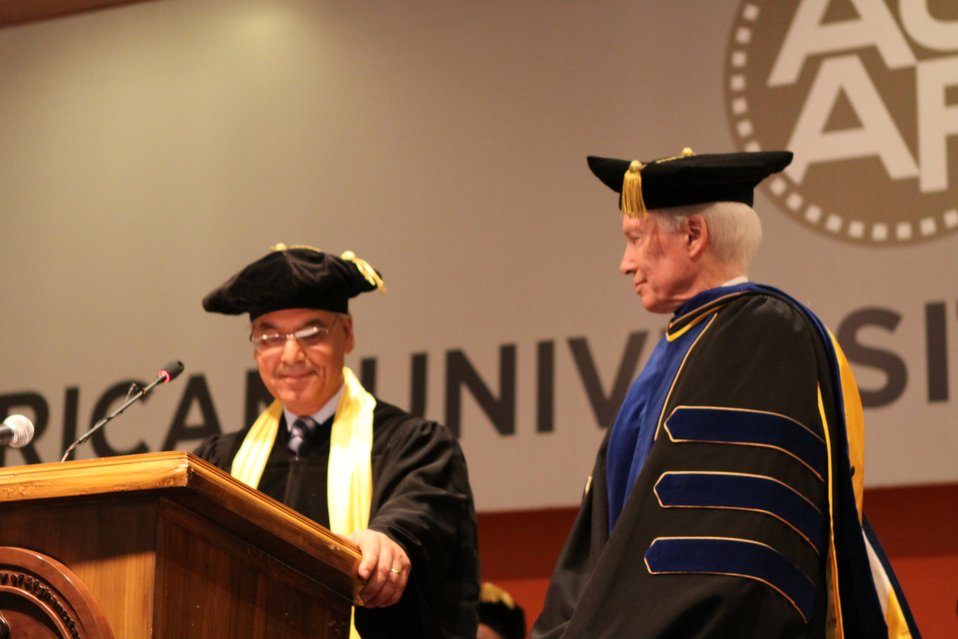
100526 AUAF Graduation 168